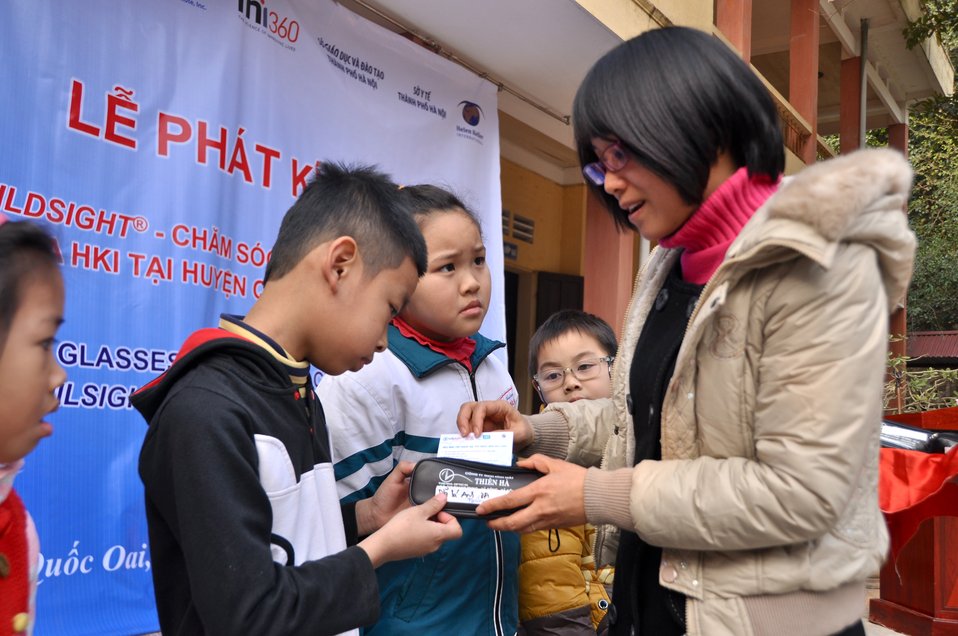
USAID supports distribution of eyeglasses to pupils and teachers in Quoc Oai, Hanoi.

Kieu Phu Junior Secondary School, Quoc Hoai, Hanoi, December 23, 2013.